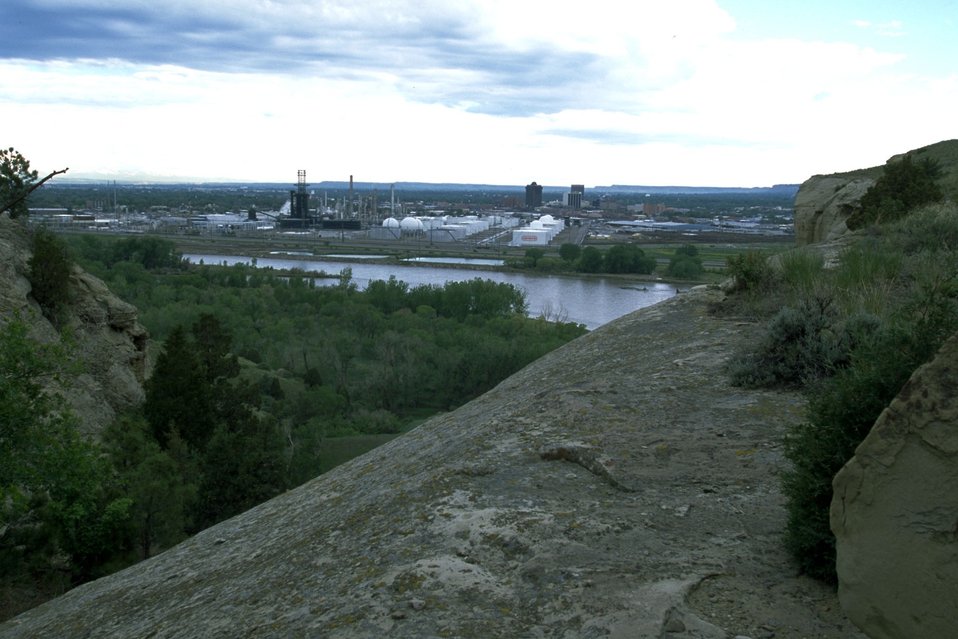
View of the oil refinery in Billings and Yellowstone River from the rimrocks in the Four Dances Natural Area